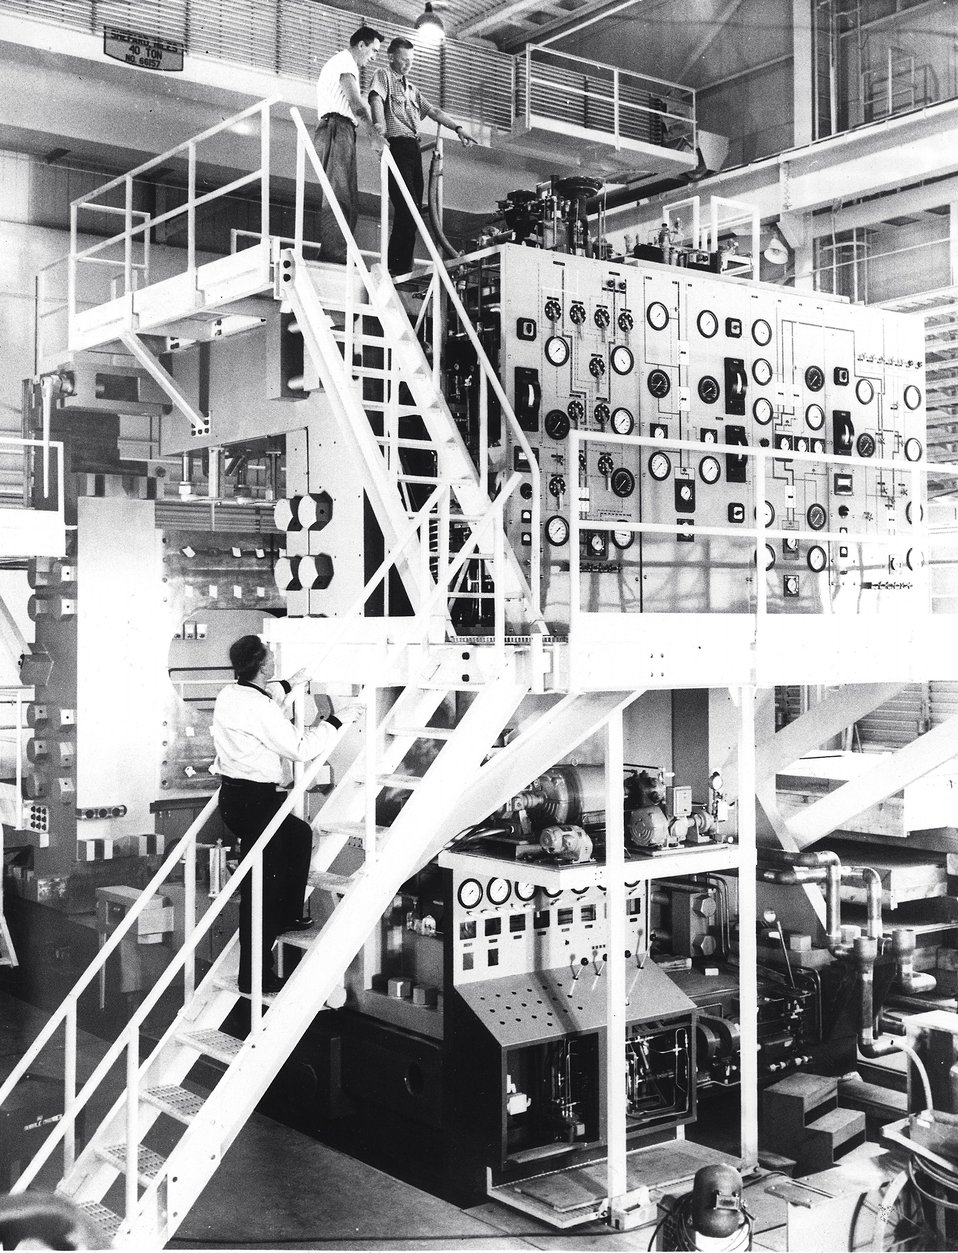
Inside the 80-inch Bubble Chamber Building. At the floor level is the hydraulic control panel for the elevation and rotation of the entire bubble chamber structure. c. 1963